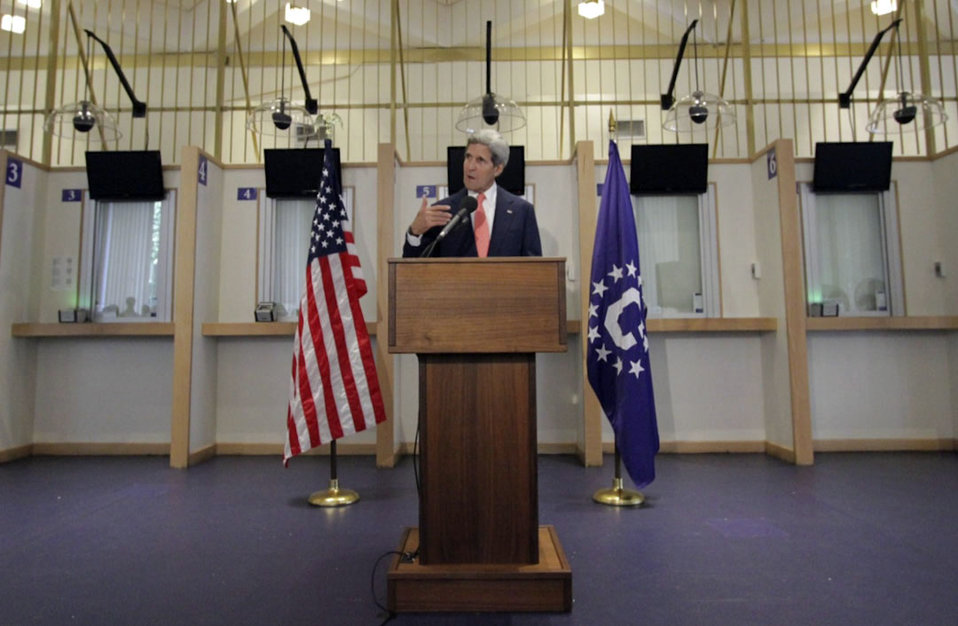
Secretary Kerry Announces Same-Sex Couple Visa Change

U.S. Secretary of State John Kerry addresses employees at the U.S. Embassy in London, United Kingdom, on August 2, 2013, to announce that the U.S. Department of State would immediately start granting visas to same-sex couples just as it does for opposite-sex couples, after the U.S. Supreme Court overturned the Defense of Marriage Act.